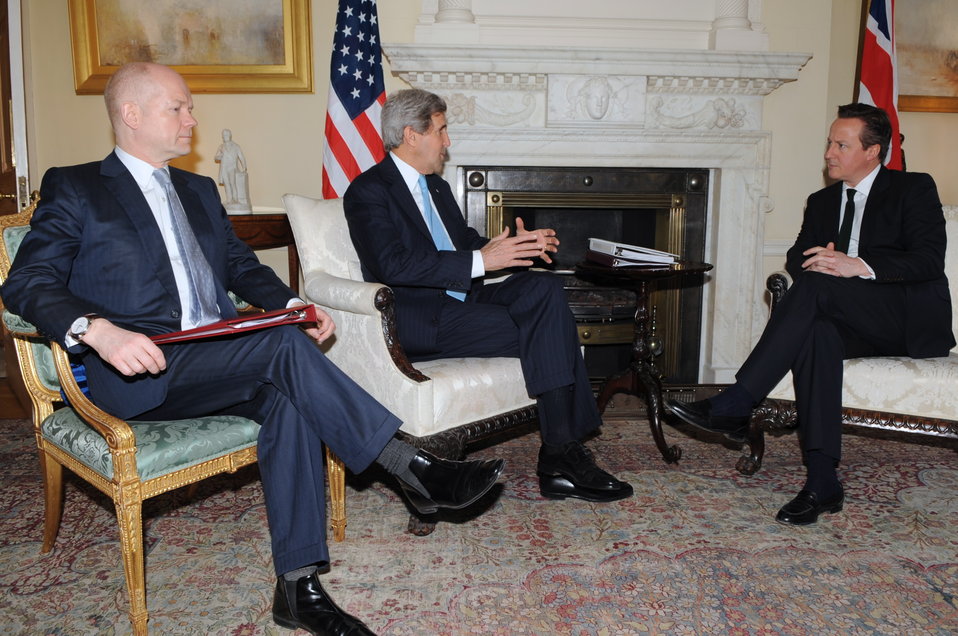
Secretary Kerry Meets With British Prime Minister Cameron, Foreign Secretary Hague

U.S. Secretary of State John Kerry sits in No. 10 Downing Street in London, United Kingdom, at the outset of a meeting with British Prime Minister David Cameron and Foreign Secretary William Hague on March 14, 2014.